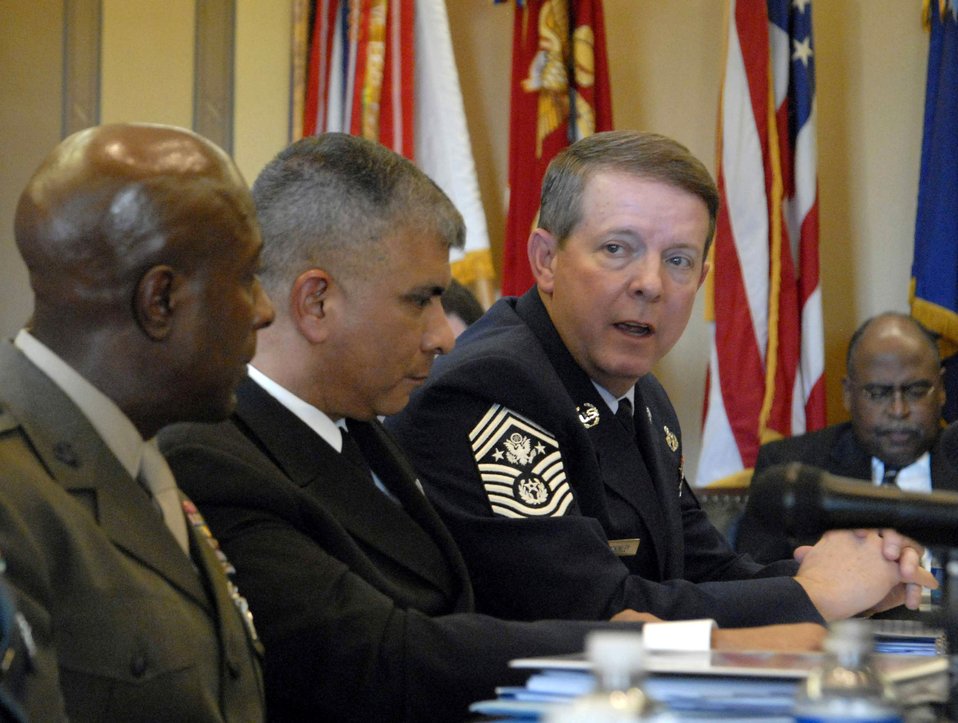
CMSAF testifies on quality of life

Chief Master Sgt. of the Air Force Rodney J. McKinley answers questions on healthcare during his testimony at the Capitol Building Feb. 7 in Washington, D.C. The House Appropriations Subcommittee on Military Construction and Veterans Affairs held the hearing to discuss military quality of life issues.